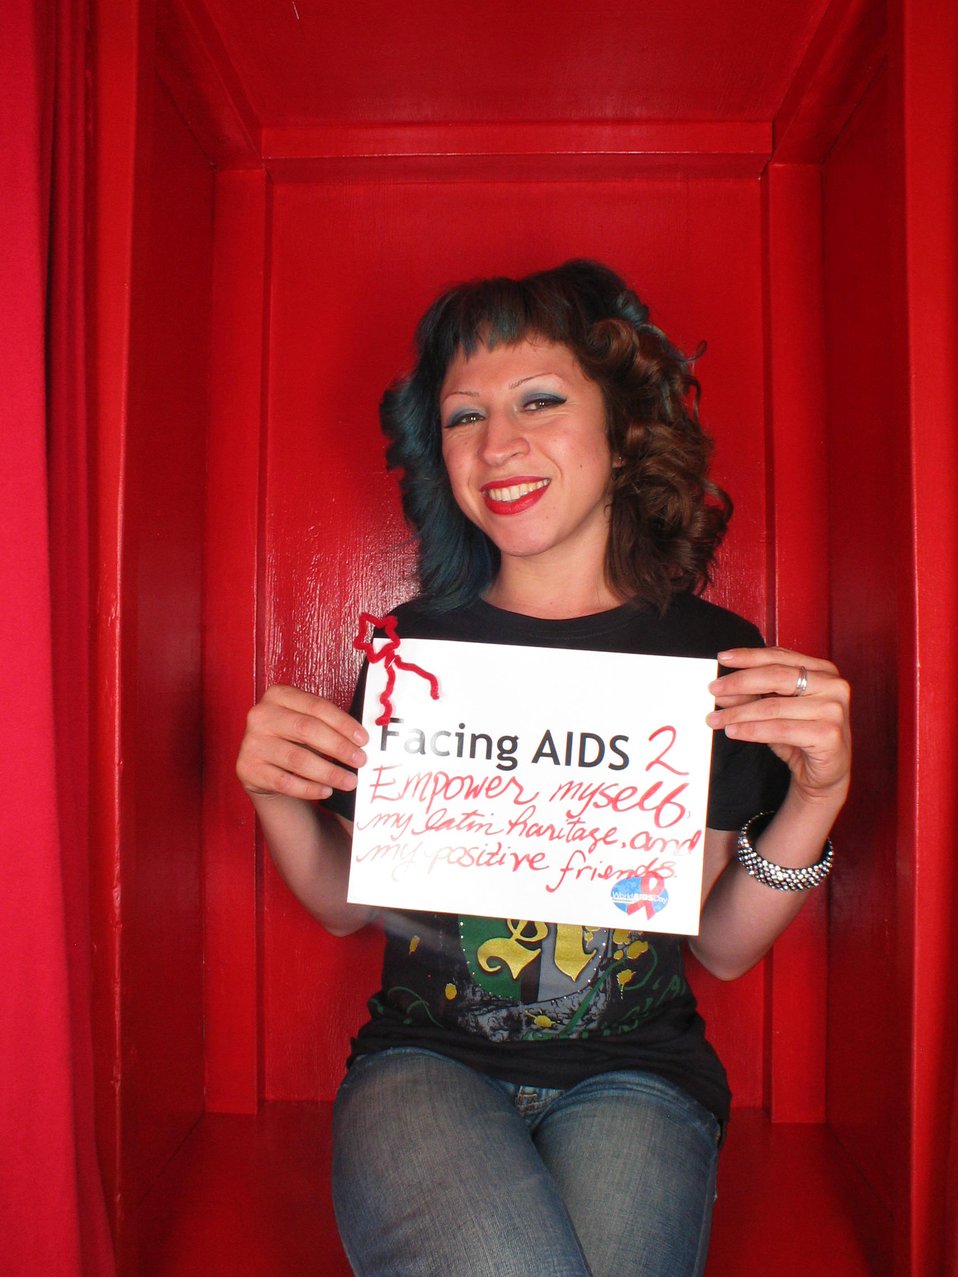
Facing AIDS 2 empower myself, my latin heritage and my positive friends.